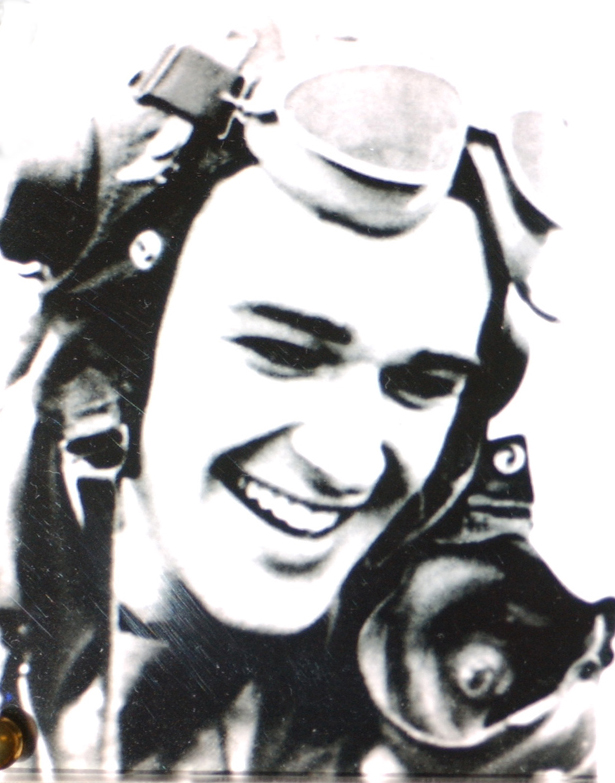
World War II, Korean War ace passes away May 11

Retired Col. Walker